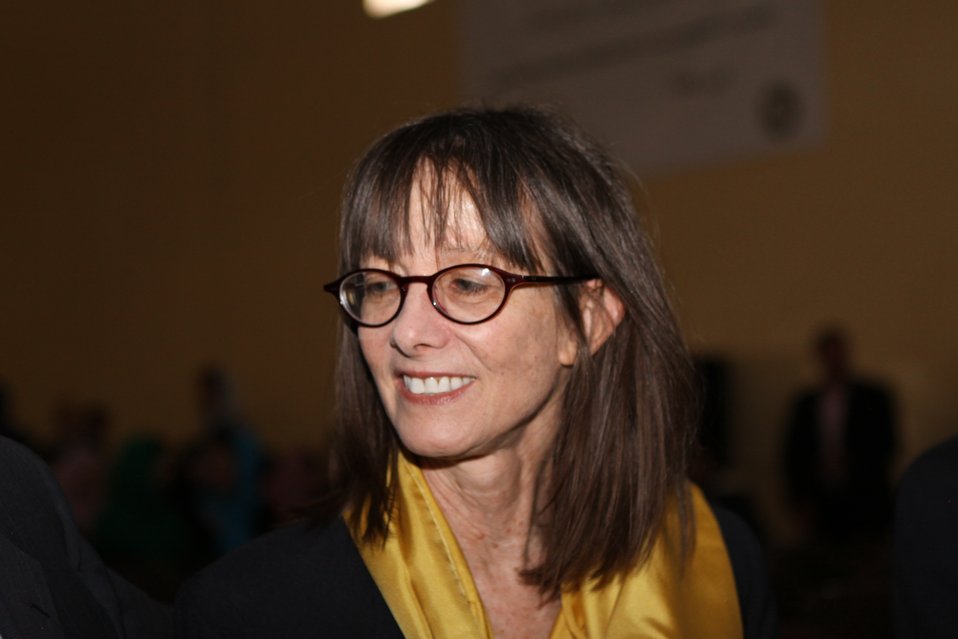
100526 AUAF Graduation 103